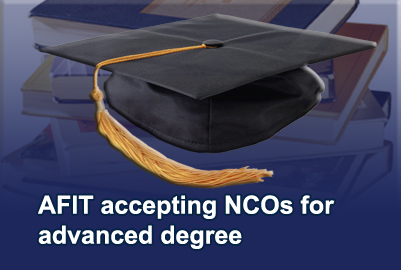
AFIT

Air Force Institute of Technology officials are offering six NCOs the opportunity to pursue an advanced science, engineering or management degree at Wright-Patterson Air Force Base, Ohio.